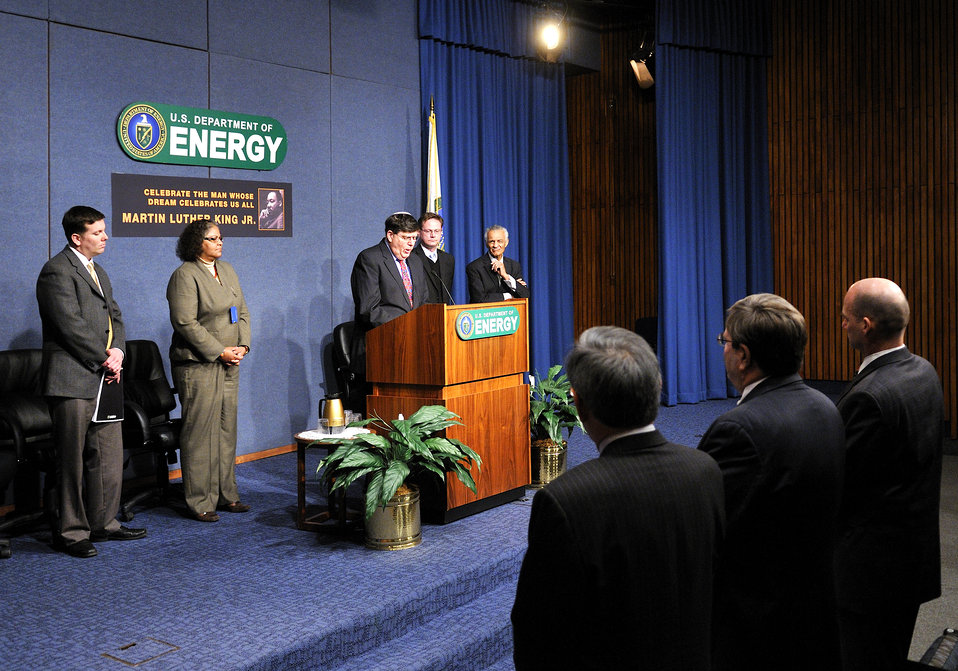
Rabbi Charles Feinberg speaking at the Martin Luther King Jr. Day Celebration at DOE headquarters.